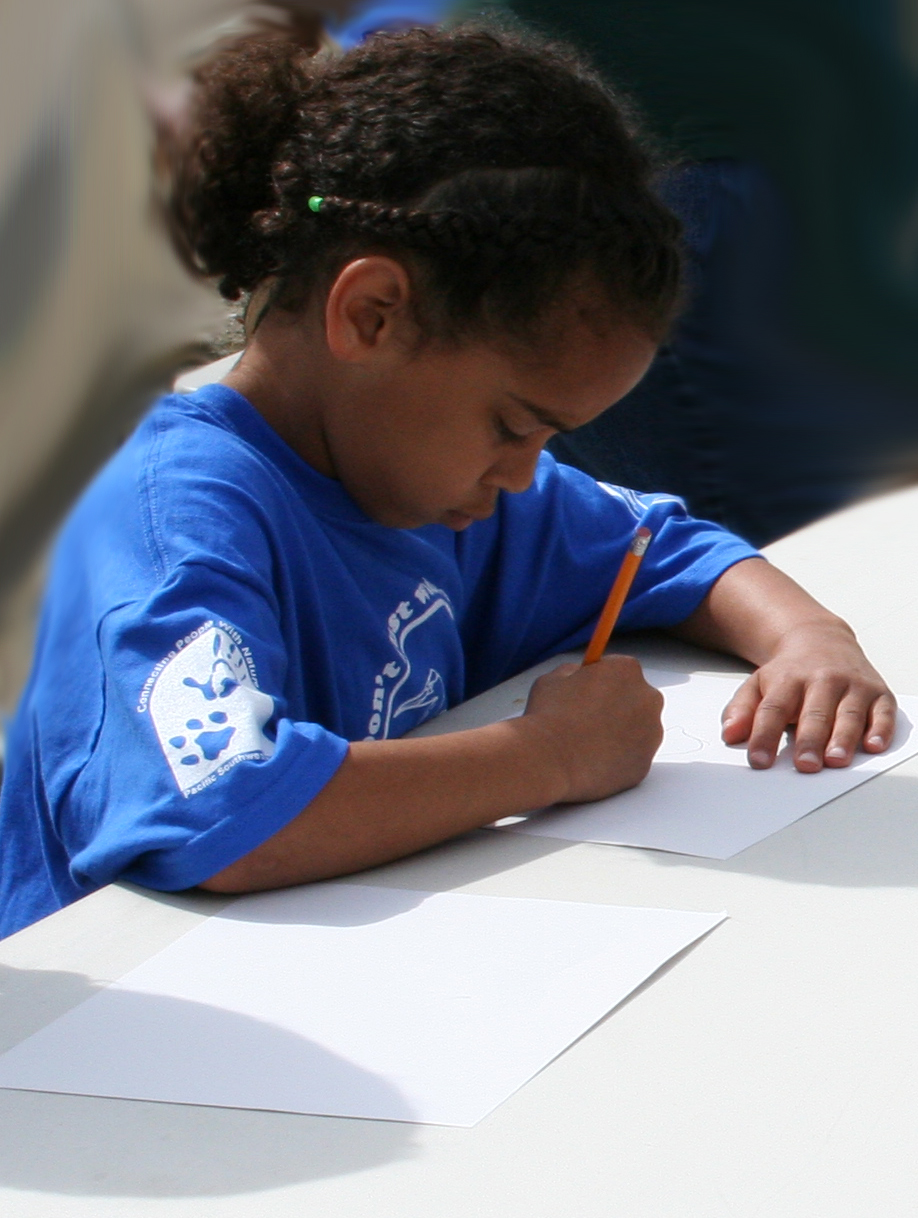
Drawing a duck and practicing for the Junior Duck Stamp Contest